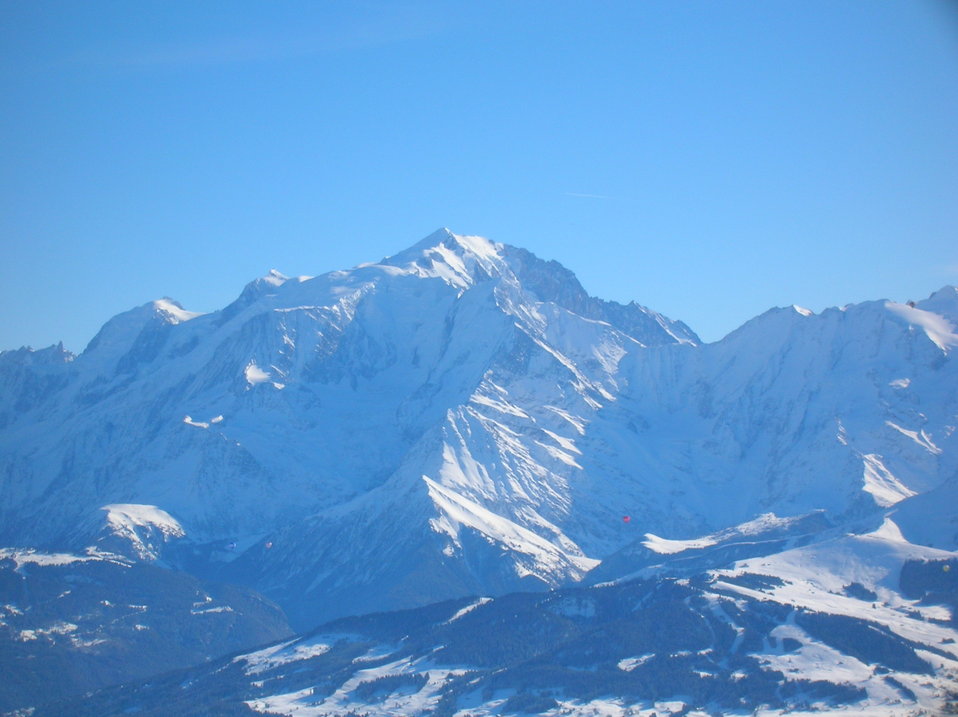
Mt-Blanc seen from the Massif de la Balme (La Clusaz) Fran√ßais†: Mt-Blanc vu depuis le Massif de la Balme (La Clusaz)